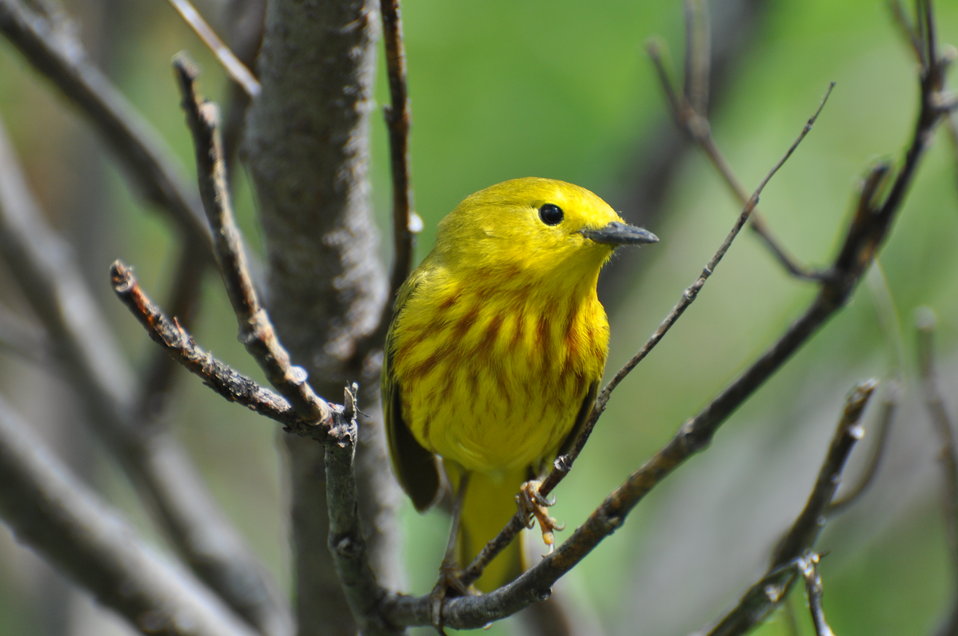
Yellow Warbler male

Andreafsky wilderness, Yukon Delta National Wildlife Refuge